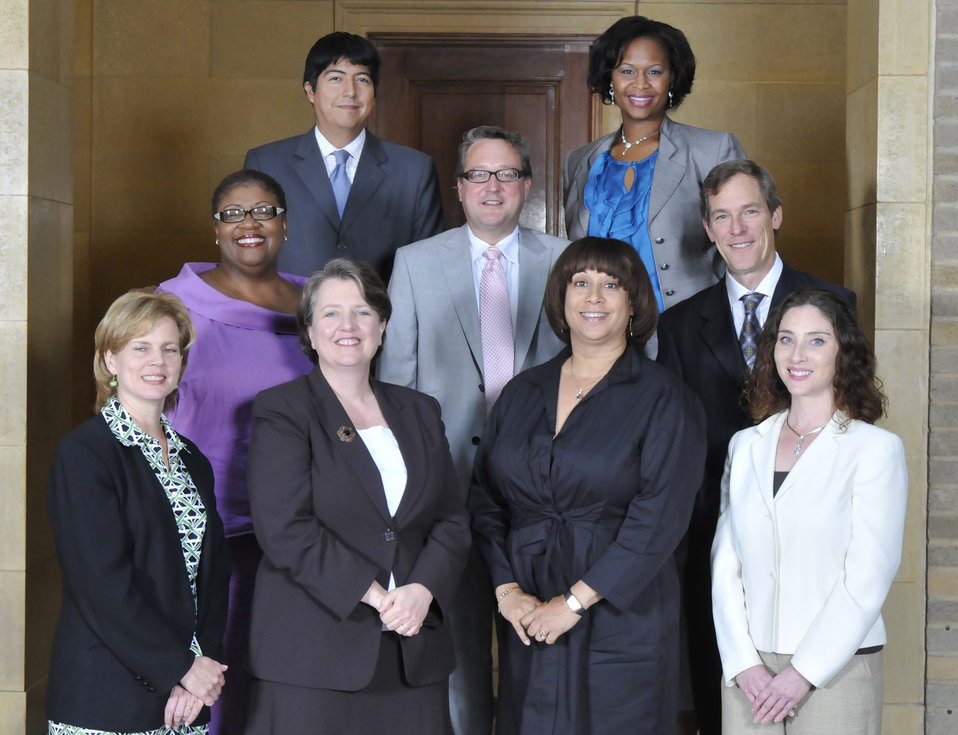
Program Civil Rights Class Action Team
Office of the General Counsel, Washington, DC
Inga P. Bumbary-Langston, Group Leader
For outstanding dedication and cooperation in successfully resolving years of contentious class action litigation by developing meaningful paths for monetary and programmatic relief that will benefit future generations of farmers.
On September 14, 2011 in the patio of the Whitten Building Patio of the US Department of Agriculture in Washington, DC.